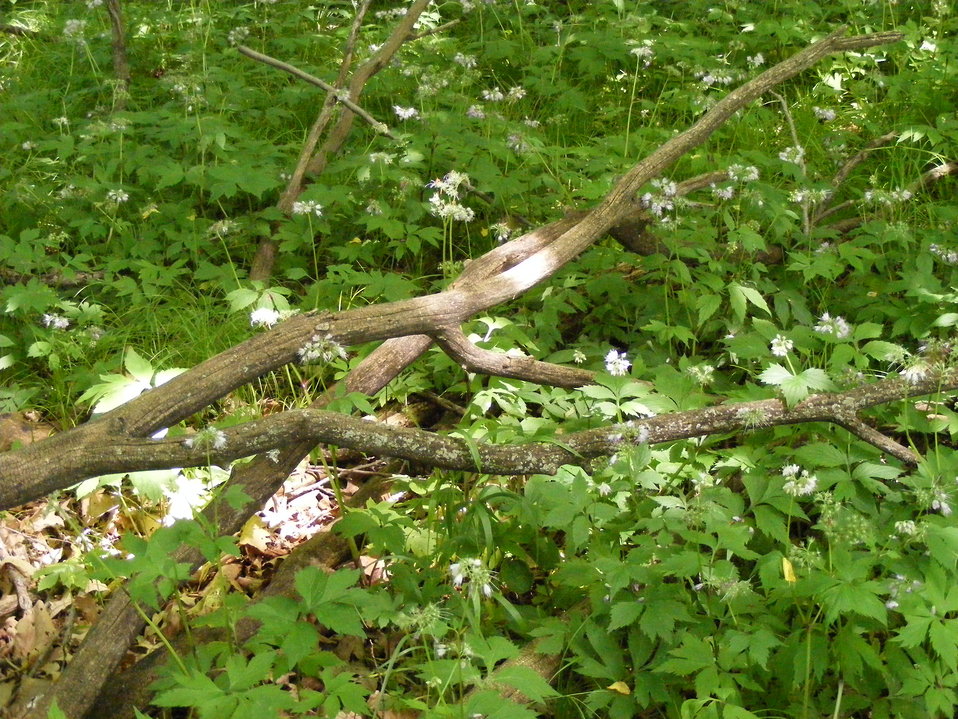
Woodland Understory

Virginia waterleaf and other woodland plants thrive in the shaded understory at Waubay National Wildlife Refuge.